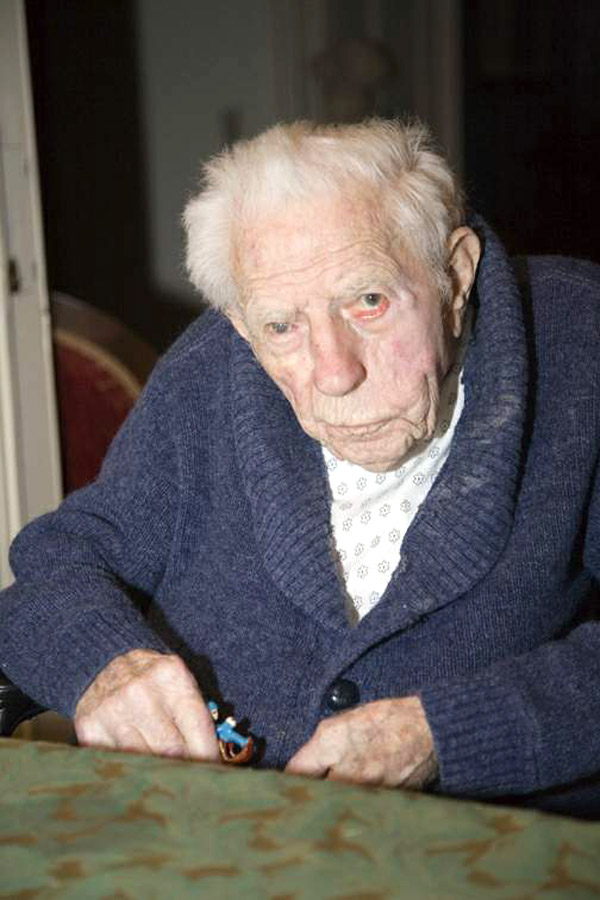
Retired chaplain's life shining example of duty, faith

Retired Lt. Col. James Good Brown served as the chaplain for the 381st Bomb Group during World War II. He recently celebrated his 105th birthday. He also published a book,